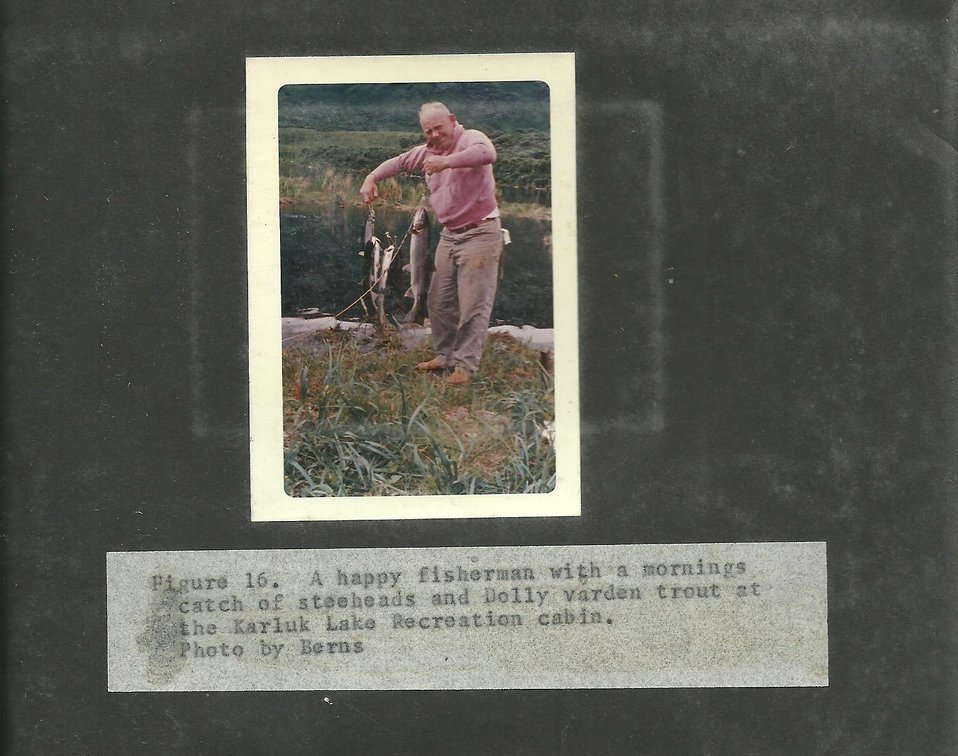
(1964) Happy Fisherman

Credit: USFWS

Source and Contact: Kodiak National Wildlife Refuge